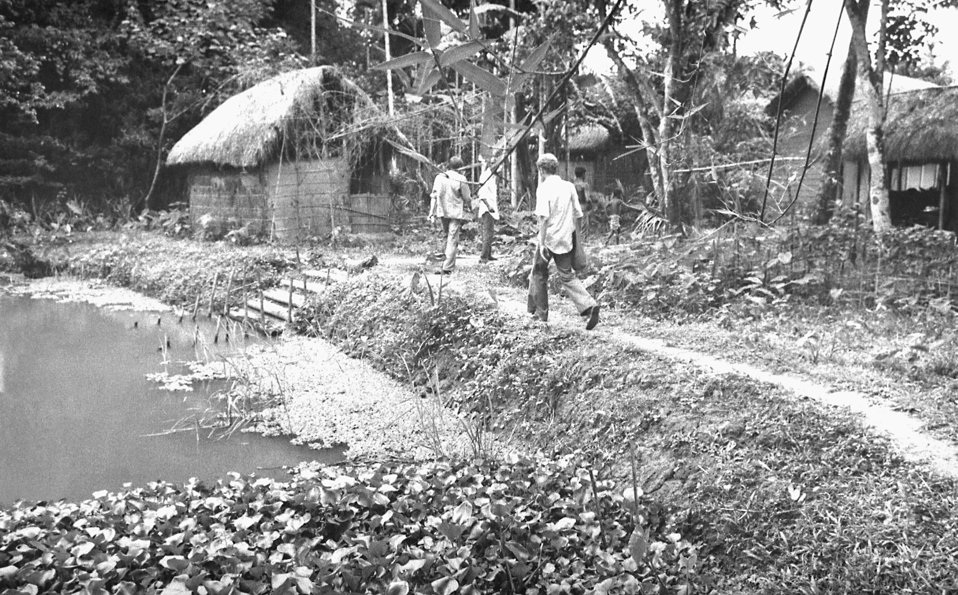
This was a typical Bangladesh rural village with its walking path, thatched roofed houses, and pond. This image was part of a series provided by Dr. Stan Foster, and captured by Pierre Claquin, M.D., B.A.C., who at the time was a member of the World Health Organization's Smallpox Eradication Program. It was part of a series photographed by former E.I.S. officer, Stanley O. Foster M.D., M.P.H., and was one of a series entitled 'The Story of One Smallpox Jeep', which depicted the travails faced by the jeep, and its occupants of public health practitioners, as they road through the Bangladesh countryside in an attempt to eradicate smallpox from the country.